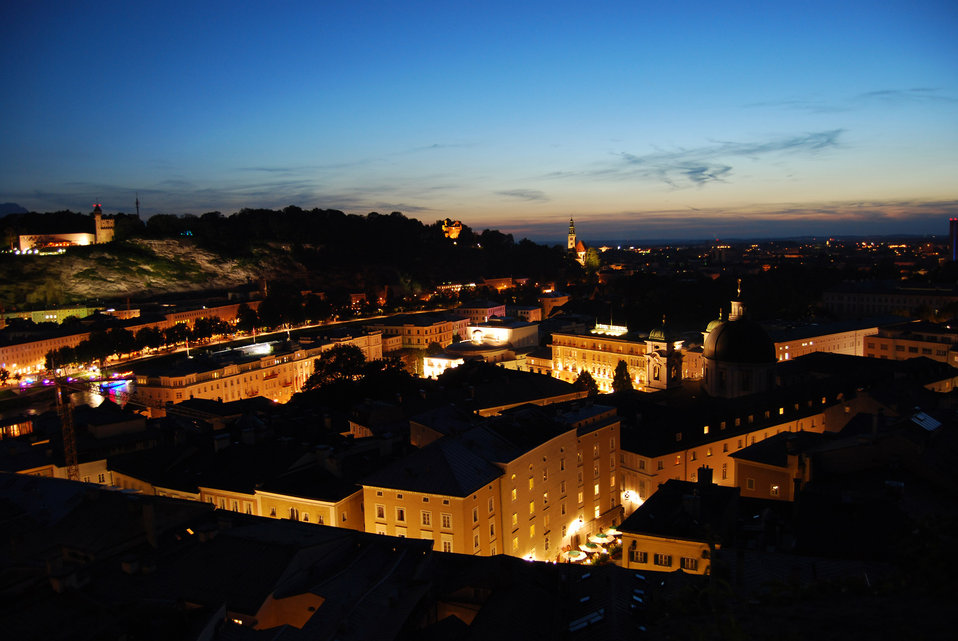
Night at salzburg

A night shot of salzburg, austria.